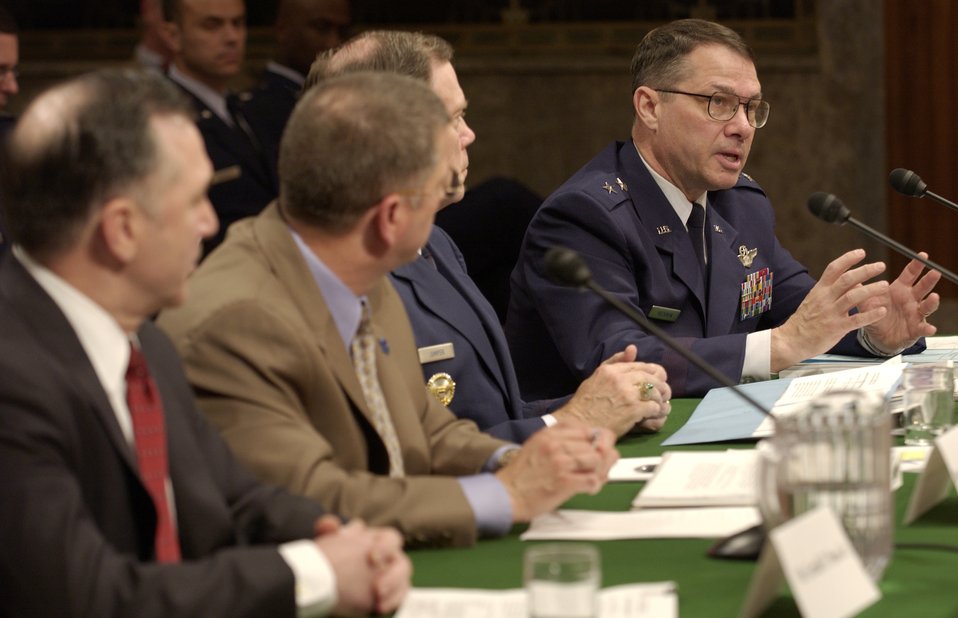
BRAC recommendations present beneficial results, tough choices

WASHINGTON -- Maj. Gen. Gary W. Heckman (far right) answers a question during a public hearing of the Base Realignment and Closure Commission here May 17. General Heckman's primary focus is the Air Force's play in the BRAC process and in the Quadrennial Defense Review. He is the assistant deputy chief of staff for plans and programs.